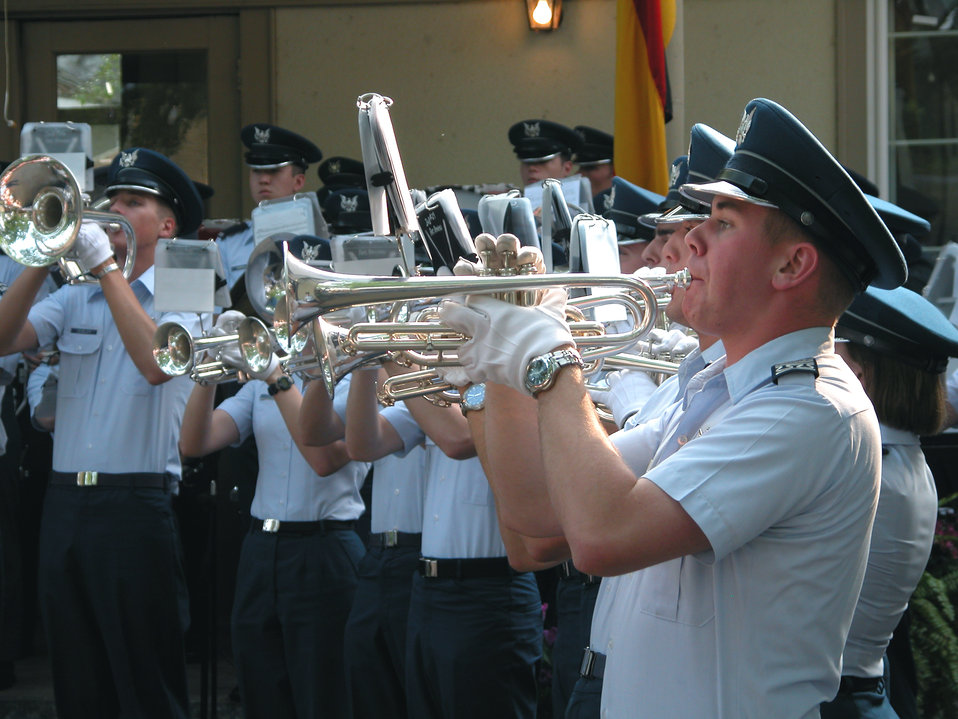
Fiesta music

SAN ANTONIO -- Members of the U.S. Air Force Academy Drum and Bugle Corps play a marching tune here April 23 during a Fiesta event. The group marched in the annual Fiesta Battle of Flowers parade and performed at several Fiesta venues.